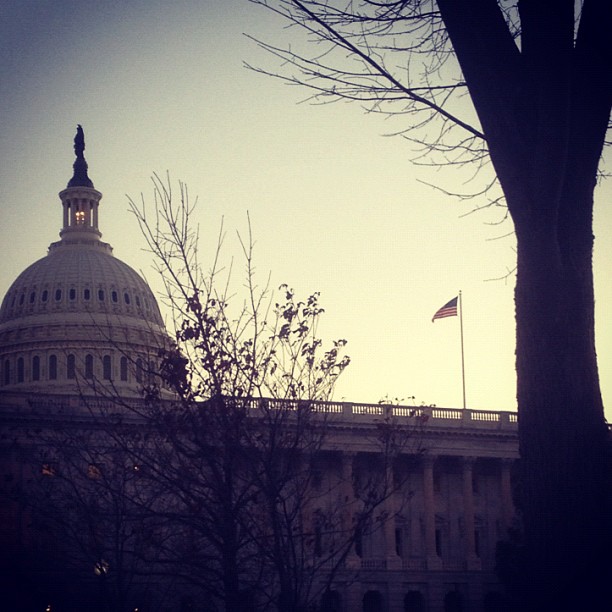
Tholos lit, evening session at the Capitol.